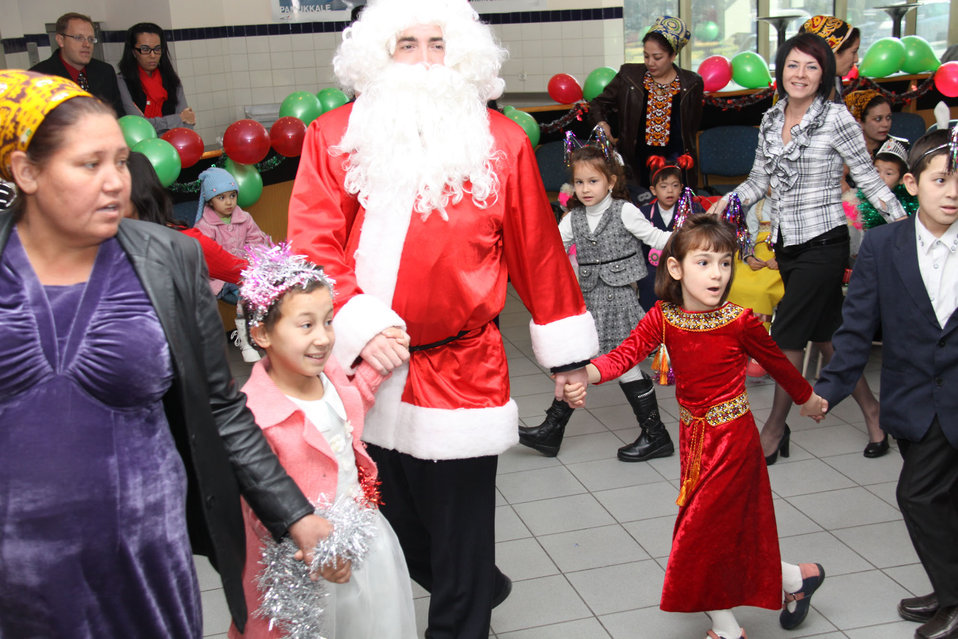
The Embassy Ashgabat Community Plays Games With Turkmen Children

U.S. exchange alumni, together with the U.S. Embassy community and local NGOs, brought the holiday spirit to over 90 orphans, disabled children, and disadvantaged youth at the U.S. Embassy Ashgabat in Turkmenistan in December 2010.